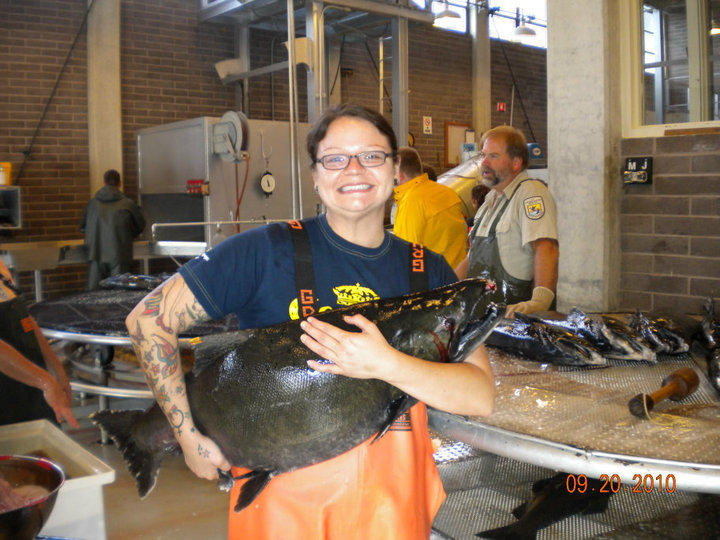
A little fish love - Spring Creek NFH

FWS employee, Maria Montoya, gets close with a Fall Tule Chinook on her visit to Spring Creek NFH with other USFWS Pacific Region employees to help with Fall Tule Chinook spawning activities at the hatchery.